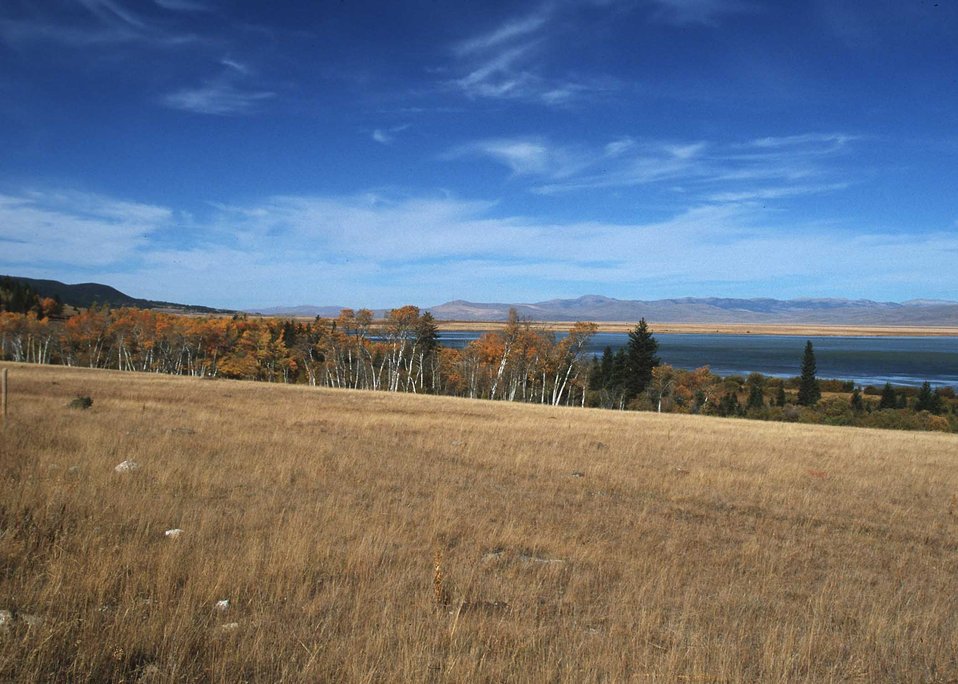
A scenic landscape of a field.